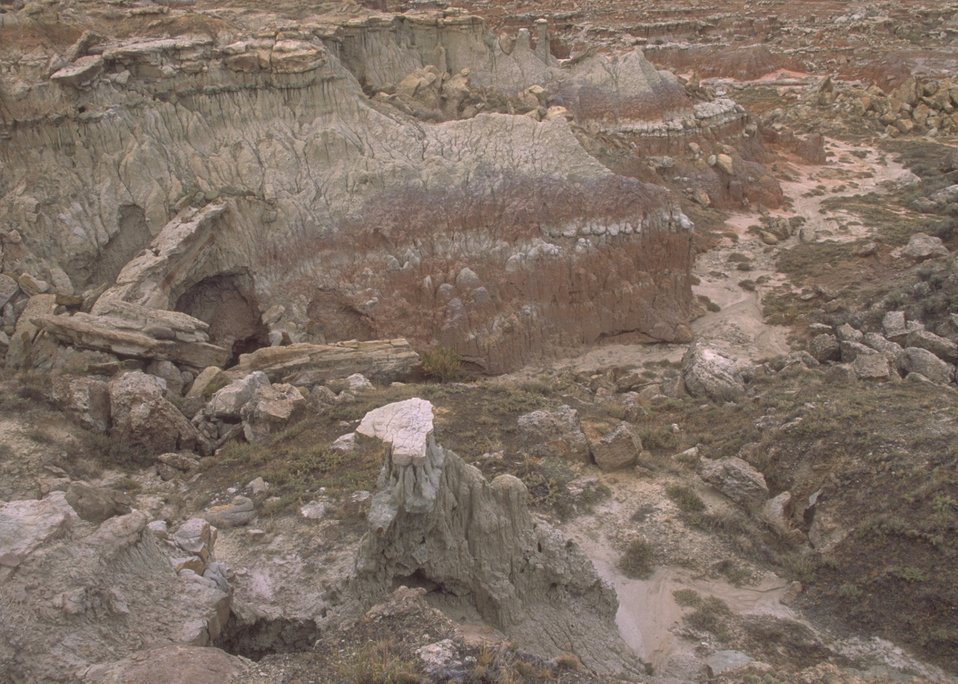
Gooseberry Interpretive Area, Worland Field Office.